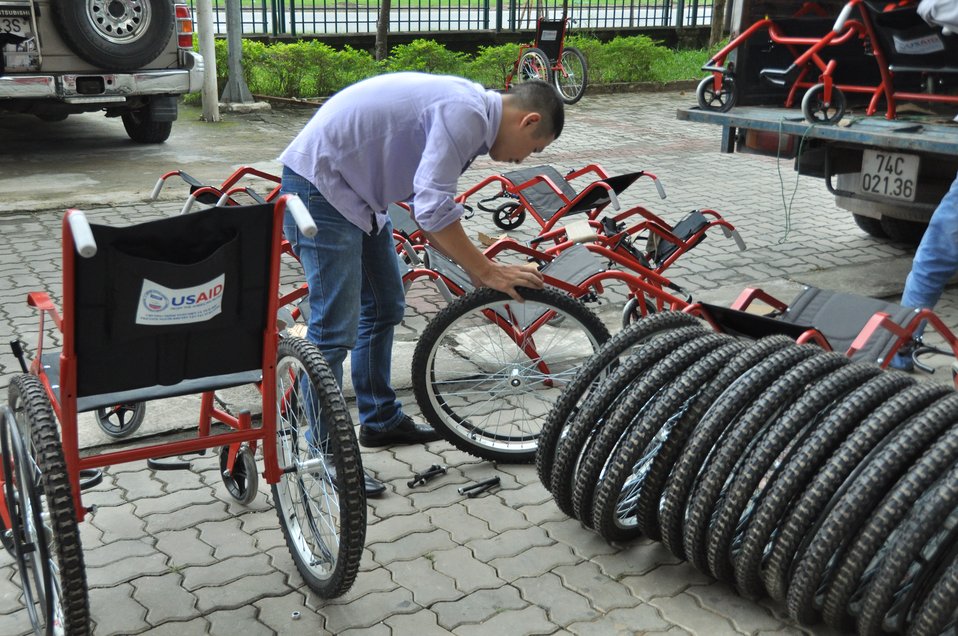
USAID supports delivery of wheelchairs to people with disabilities in Danang.

Danang, December 3, 2013.